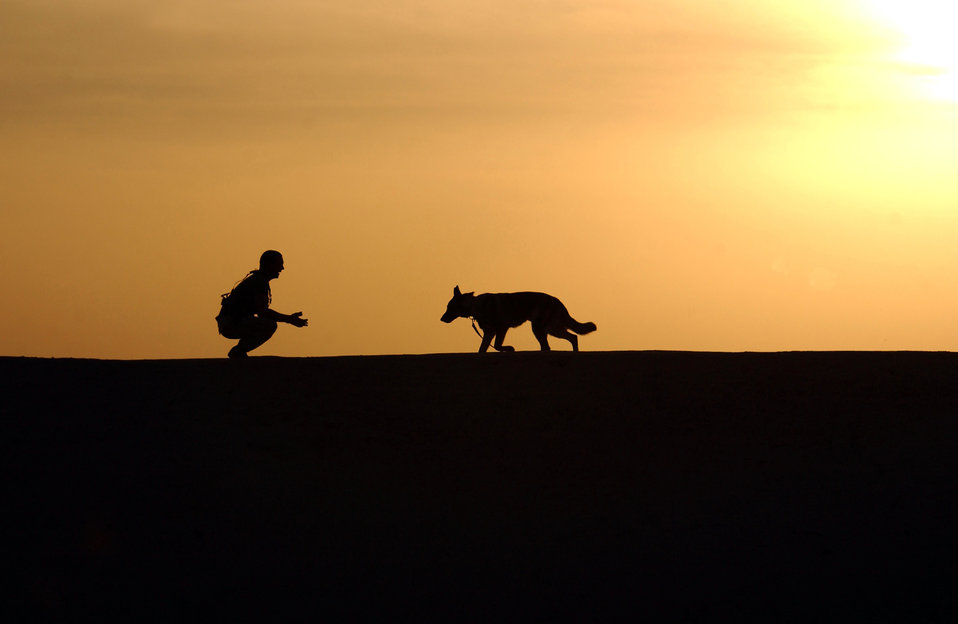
A boy and his dog

OPERATION IRAQI FREEDOM -- Staff Sgt. Chad Reemtsna, a military working dog handler and Hero, his military working dog both deployed from the 18th Security Forces Squadron, Kadena Air Base, Japan to the 363rd Expeditionary Security Forces Squadron, spend quality time together while waiting for more vehicles to search during a mobile security patrol April 8.